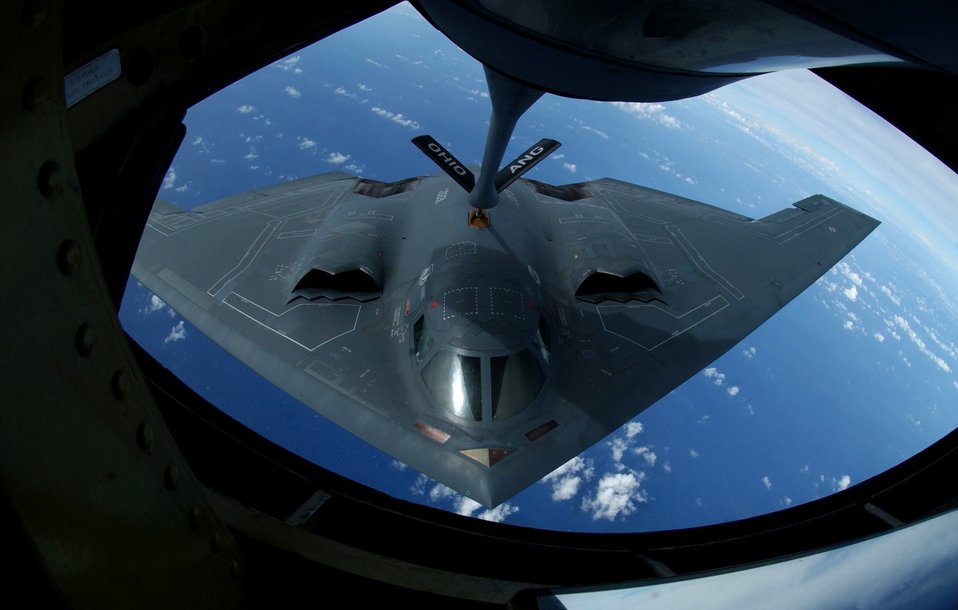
Keeping Spirits up

A KC-135 Stratotanker refuels a B-2 Spirit Nov. 20 over the Pacific Ocean. The B-2 and KC-135 are deployed to Andersen Air Force Base, Guam, to support U.S. Pacific Command's continuous bomber presence and theater security package operations. The KC-135 is assigned to the from the 121st Refueling Squadron from Rickenbacker International Airport at Columbus, Ohio. The B-2 is assigned to the 509th Bomb Wing from Whiteman AFB, Mo.